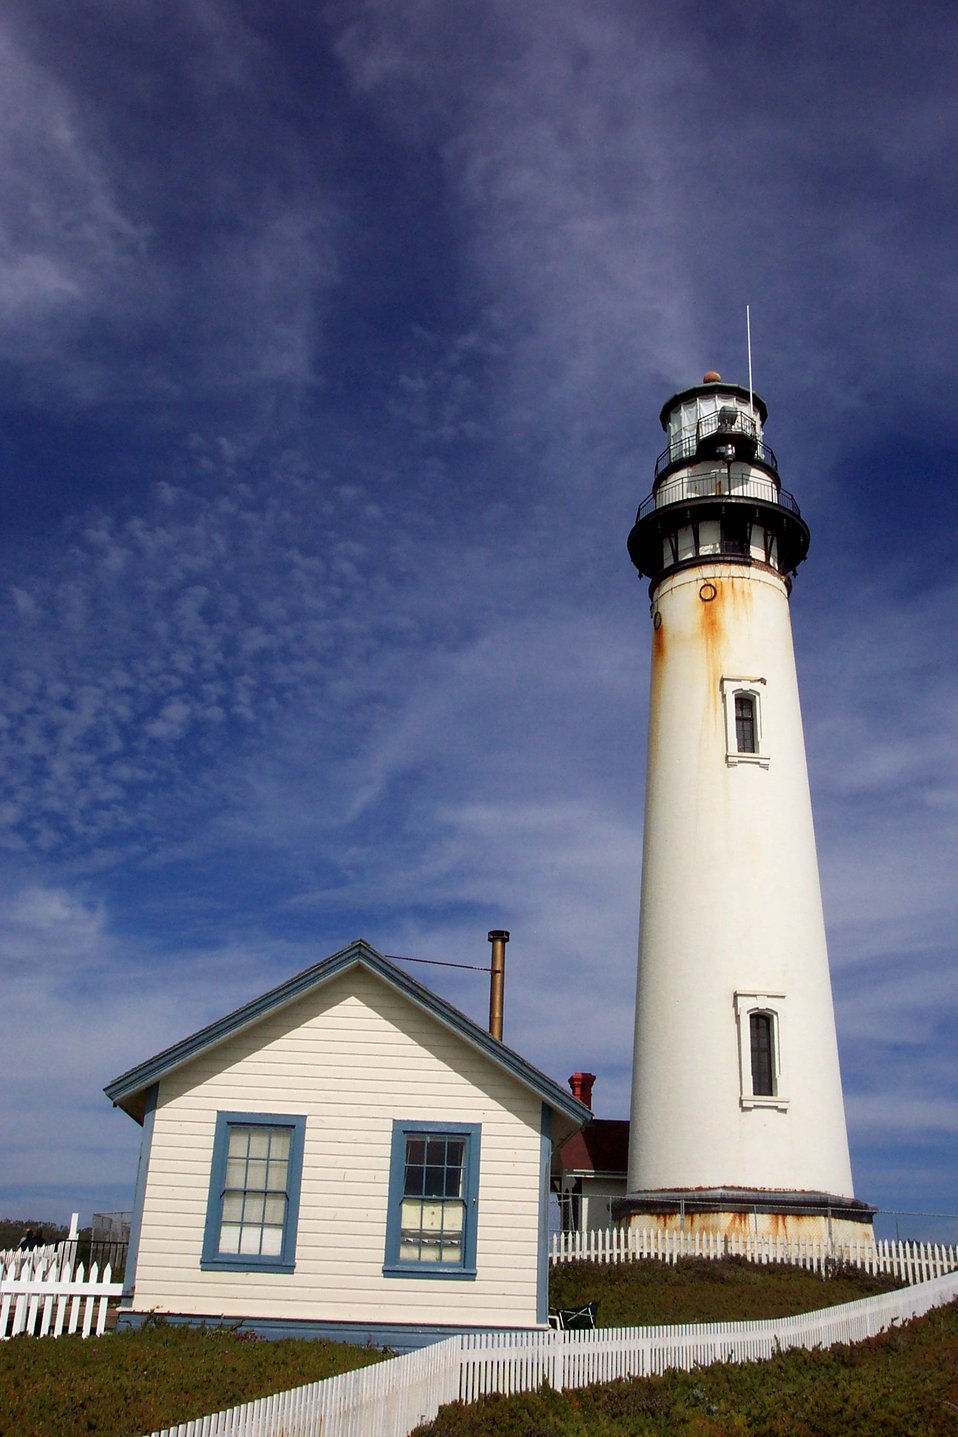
Pigeon Point Lighthouse, 27 miles north of Santa Cruz along Highway 1. The lighthouse was built in 1872 and is 115-feet high. Pigeon Point is named for the clipper ship CARRIER PIGEON which ran aground here on June 6, 1853. The Coast Survey Steamer ACTIVE assisted in rescuing the crew and passengers and transport ing them to San Francisco.